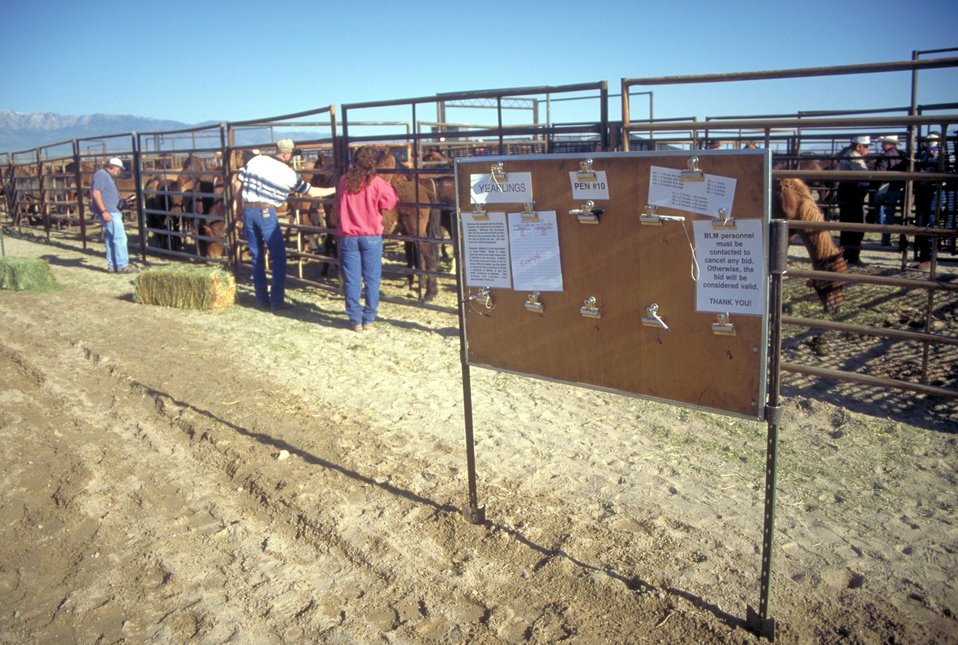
Utah Annual Wild Horse Festival.